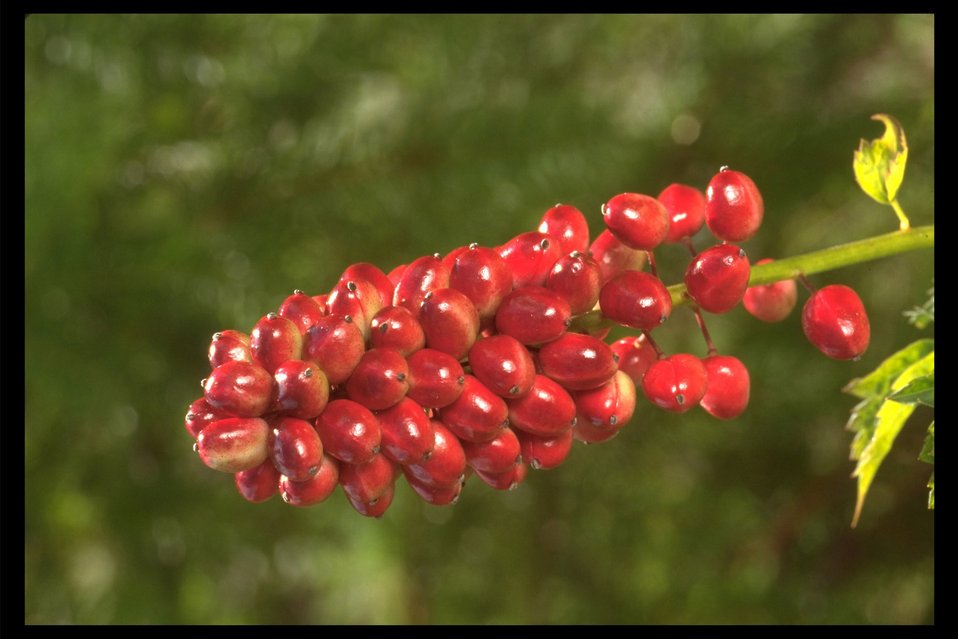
Baneberry (Actaea rubra) along Last Chance Creek (Grave Creek Drainage).